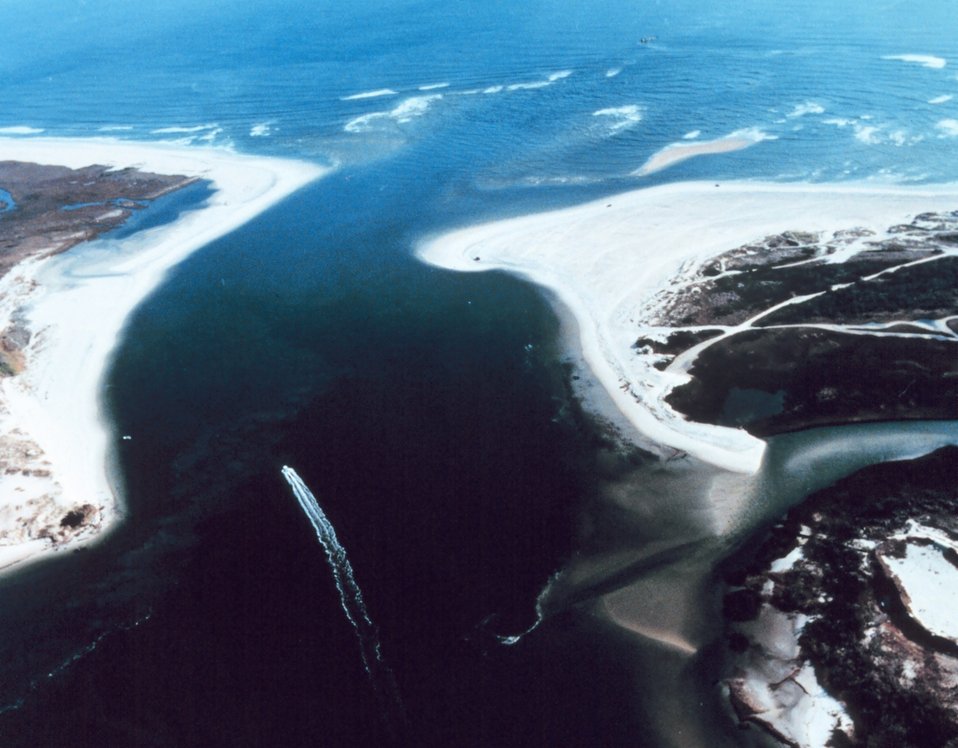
3413 North Latitude 7756 West Longitude.